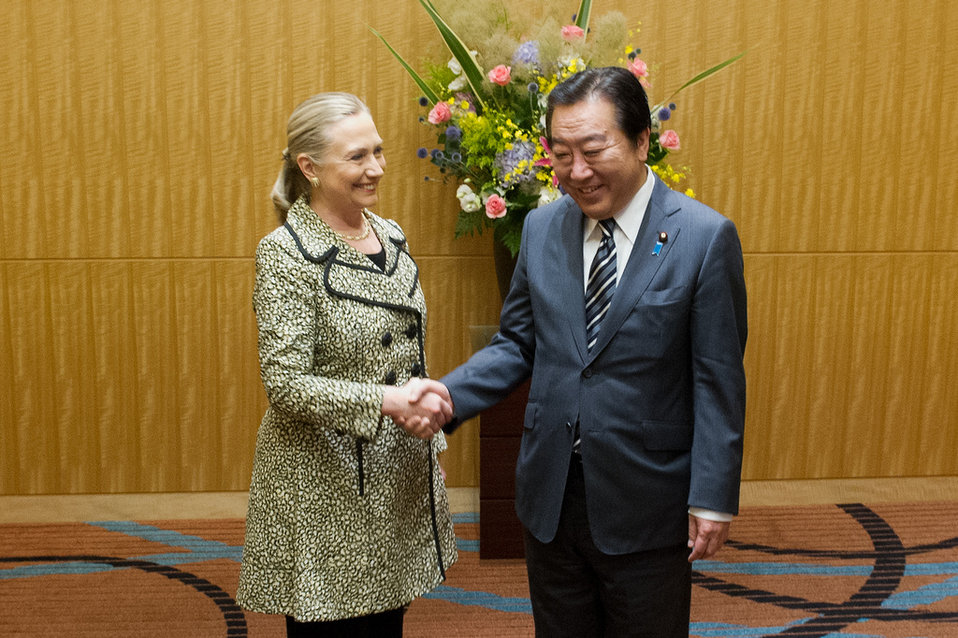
Secretary Clinton Meets With Japanese Prime Minister Noda

U.S. Secretary of State Hillary Clinton is greeted by Japanese Prime Minister Yoshihiko Noda on the sidelines of the Tokyo Conference on Afghanistan in Tokyo, Japan, on July 8, 2012.